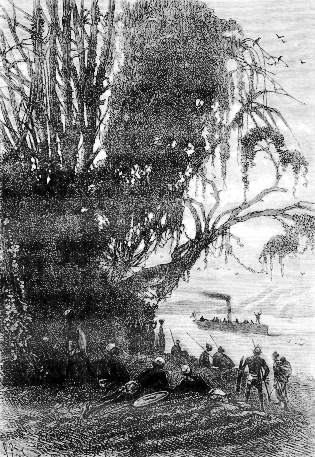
An illustration from Jules Verne's novel 'The Adventures of Three Englishmen and Three Russians in South Africa' (1870) drawn by Jules Férat. Polski: Ilustracja powieści Juliusza Verne'a 'Przygody trzech Rosjan i trzech Anglików w południowej Afryce' (1870) autorstwa Julesa Férata. Français : Jules Verne: 'Aventures de trois russes et de trois anglais dans l’Afrique australe' (1870), dessins par Jules Férat.